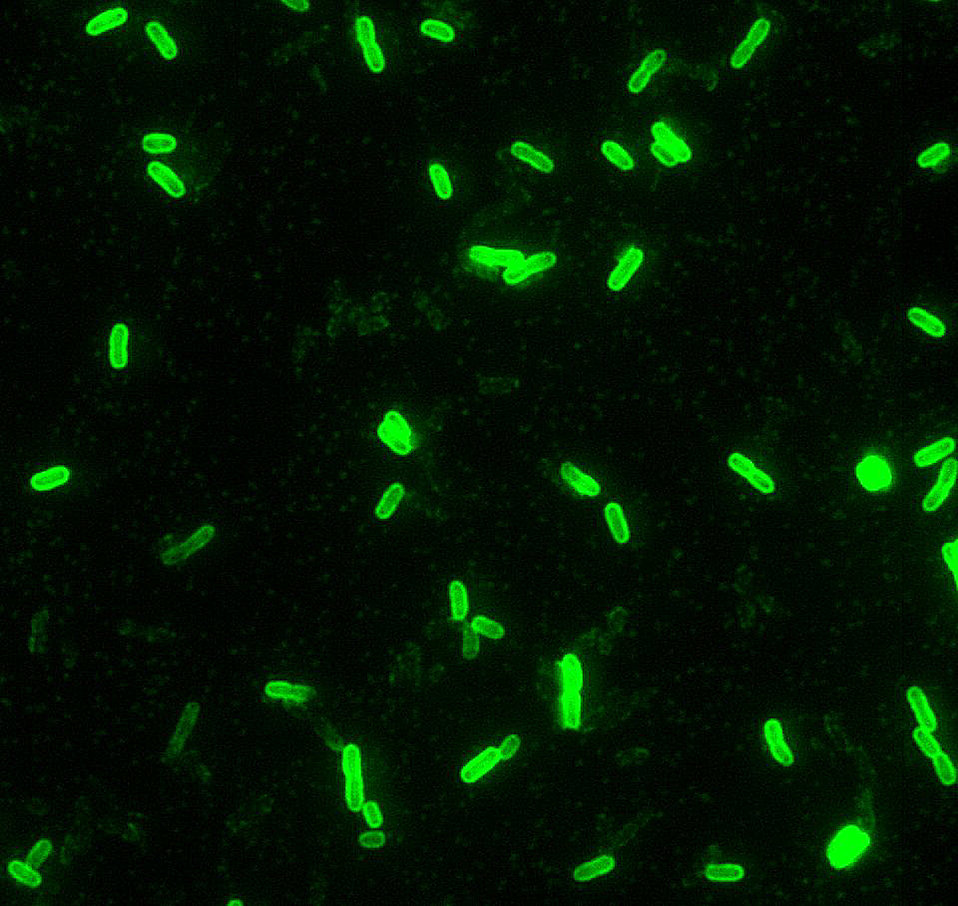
Yersinia pestis, Direct Fluorescent Antibody Stain (DFA), 100x Magnification.